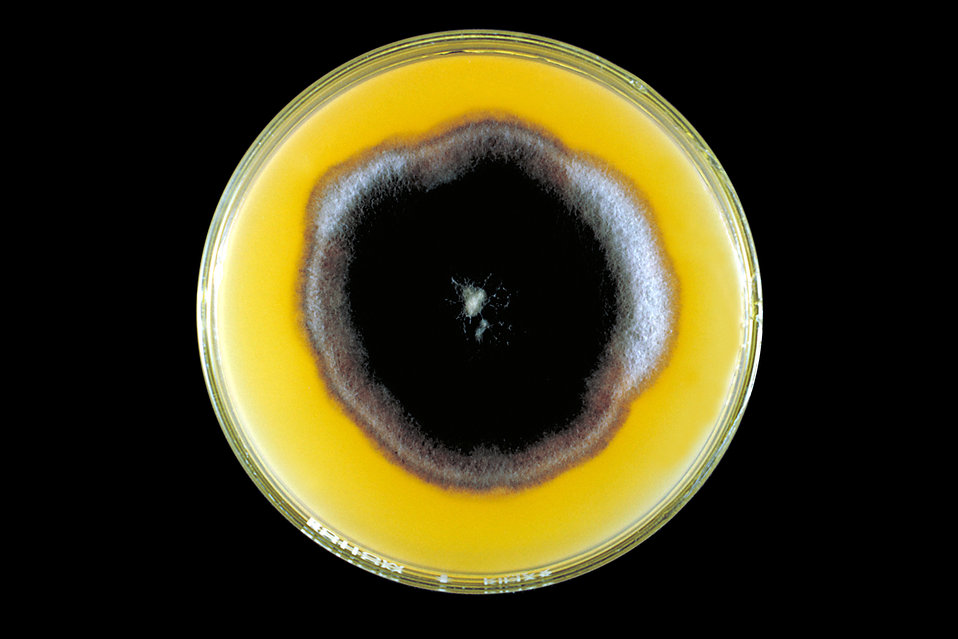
This image shows a Sabouraud's dextrose agar plate culture of the fungus Curvularia geniculata.